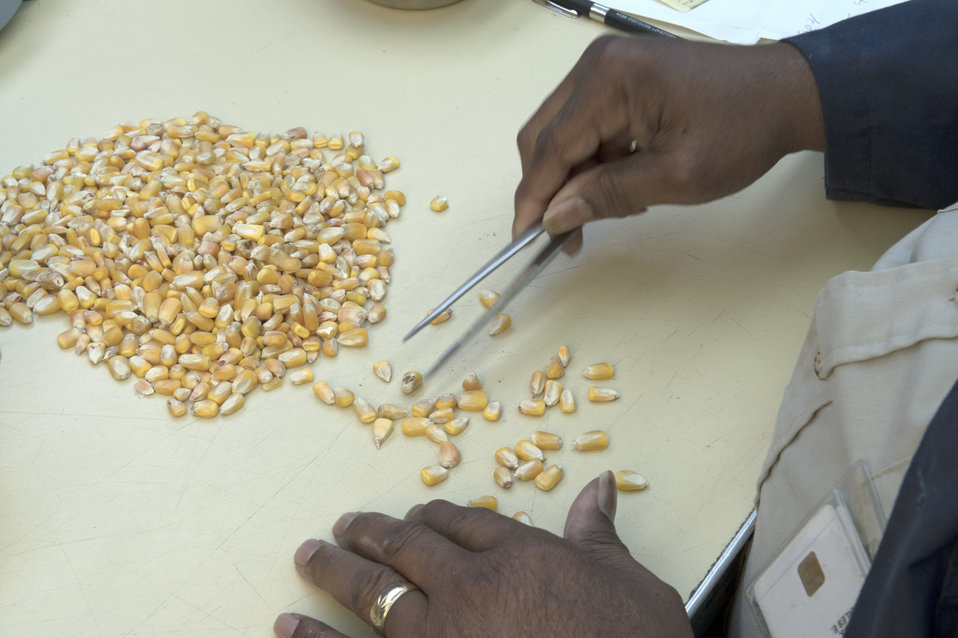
A U.S. Department of Agriculture (USDA) Grain Inspection, Packers and Stockyards Administration (GIPSA) Federal Grain Inspection Service (FGIS) scientist tests corn at the FGIS inspection laboratory in New Orleans, LA on Monday, Nov. 18, 2013.